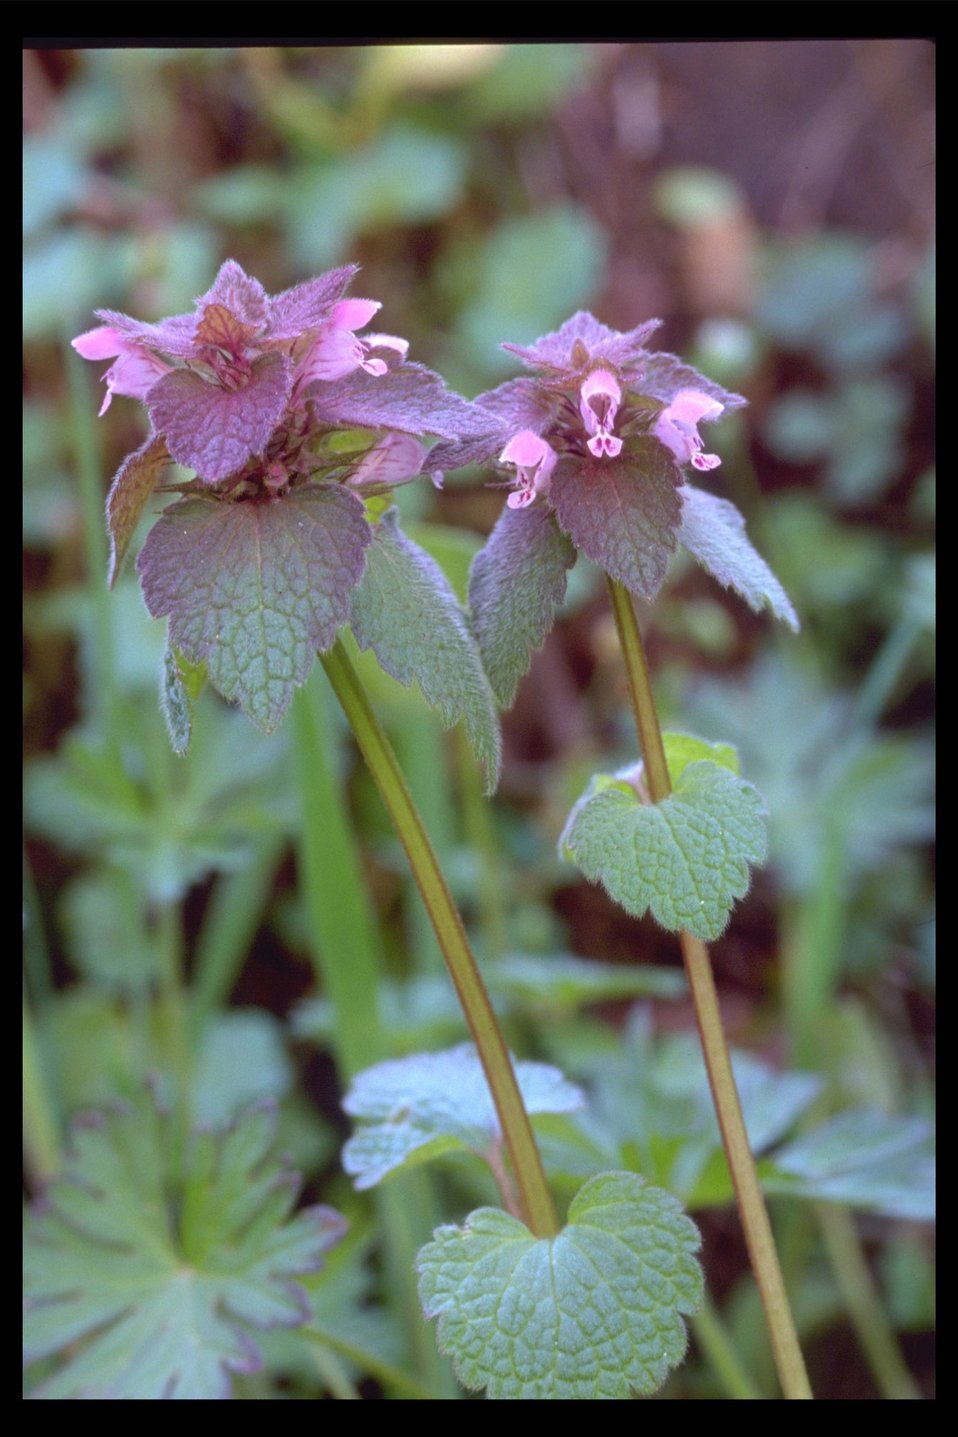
Red Henbit or Red Dead Nettle (Laminum purpureum) found along Antioch Road near Evans Creek.